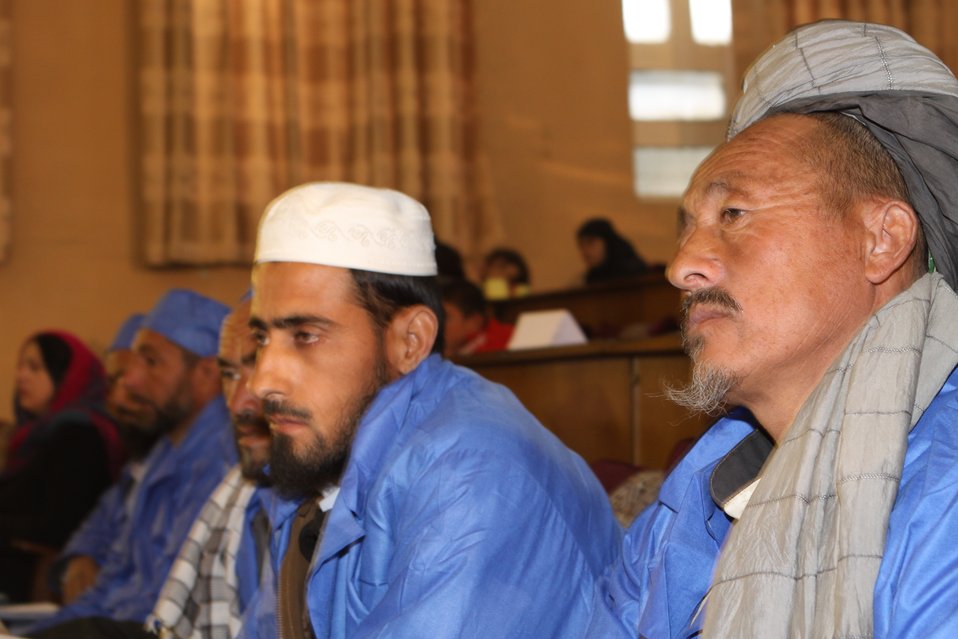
Community Health Workers Celebrated

Kabul, Afghanistan | December 5, 2010 — In support of the United Nations designated International Volunteer Day for Economic and Social Development, Afghanistan’s Ministry of Public Health celebrated its annual Community Health Worker Day today. Acting Minister of Public Health Dr. Suraya Dalil, USAID Senior Deputy Mission Director Robert Hellyer, other government officials, and international donors joined in recognizing the critical contribution of community health workers in Afghanistan and encouraging them to continue their voluntary support to their communities.
The event praised the contributions of the more than 22,000 volunteers throughout the country who deliver community level health-education, counseling, and services out of village health posts located in private homes. The Ministry of Public Health envisioned that community-based healthcare programs will actively encourage communities and families to adopt healthy lifestyles and behaviors, and provide families access to high quality and socially acceptable preventative medicine and life-saving services.
“We have 22,000 community health workers in Afghanistan that are able to implement the basic and standard medicines. They all have been trained through a job description,” said Minister Dalil. Addressing the health workers, she added, “I am proud and feel powerful that I have people like you.”
USAID-funded health projects collaborate closely with the Ministry of Public Health to improve the health and nutritional status of Afghans, provide quality primary healthcare, and promote healthy behaviors at the community and household-levels. USAID supported the training of more than 9,000 of the volunteer community health workers currently working in Afghanistan.
“On behalf of the American people, I congratulate the Community Health Workers for their diligence to gain the skills and knowledge necessary to serve their communities in this important role,” said USAID Senior Deputy Mission Director Hellyer. “USAID strongly supports community based health care and believes that quality community-based health services are essential to reaching Afghanistan’s Millennium Development Goals.”
To support the Basic Package of Health Services, USAID assisted in developing the community health worker training manual, helped train community health worker supervisors and master-trainers, facilitated in-service training, and produced and developed reporting tools, job aids, and education materials.